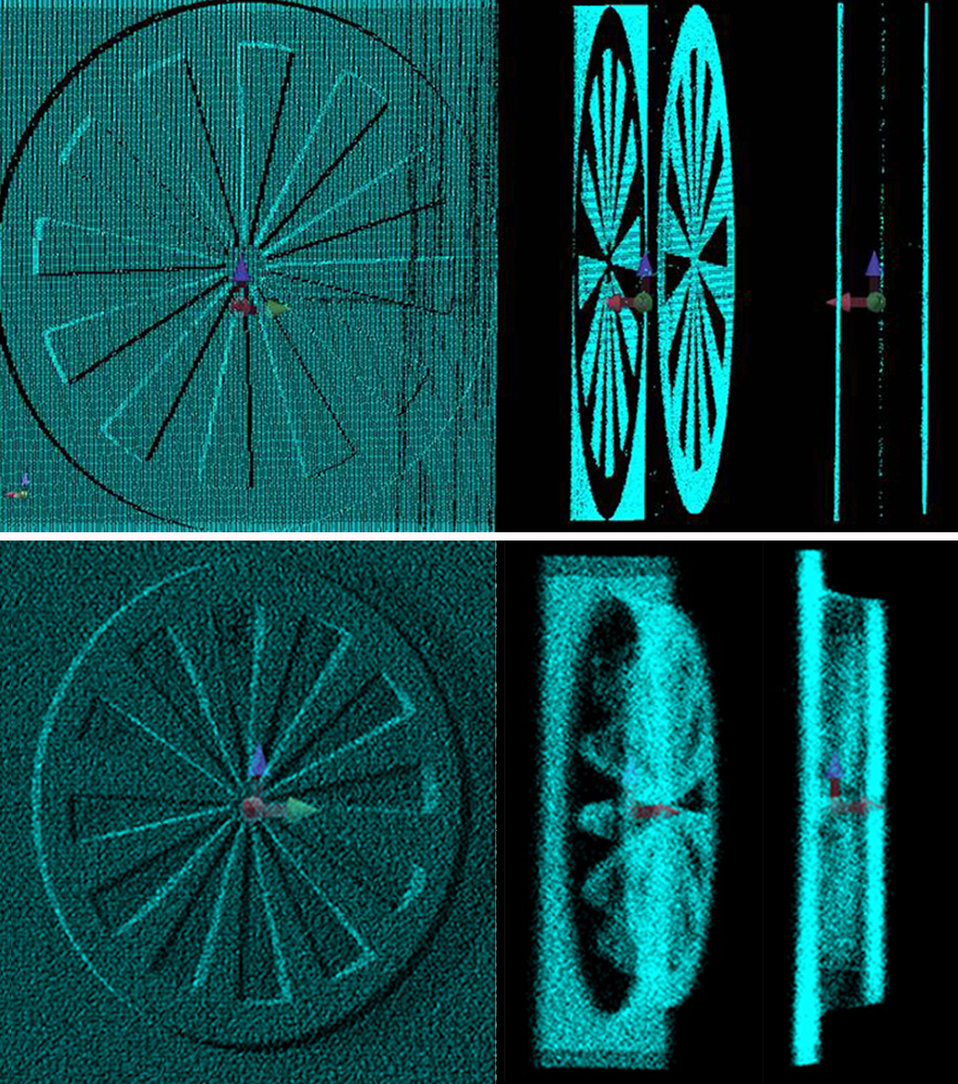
Construction; Metrology; 3-D Imaging

The two sets of images above show data obtained from two instruments used to measure a slotted disk. The top set shows less noisy or more precise data